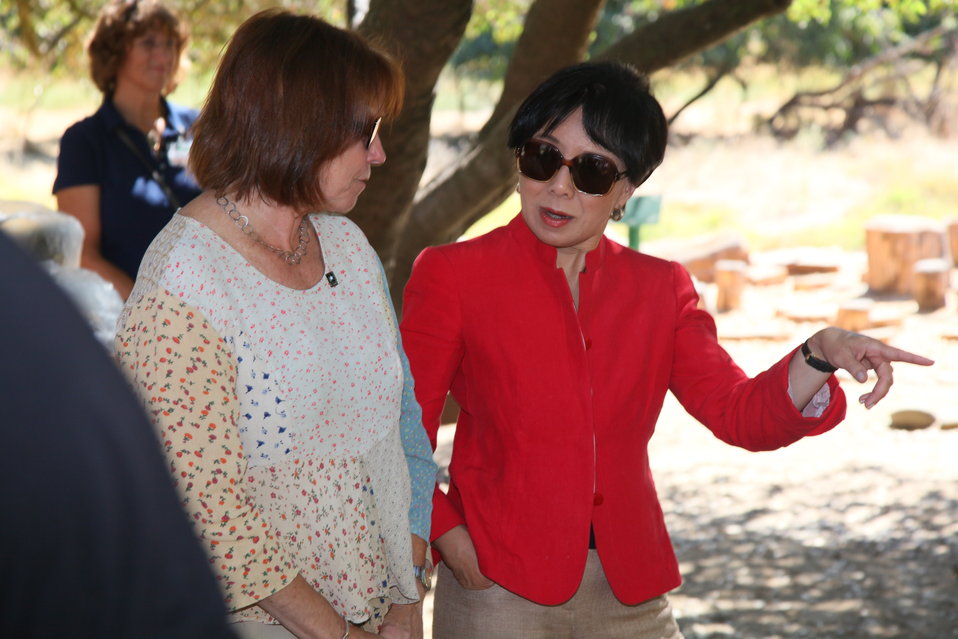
America’s Great Outdoors event at the Effie Yeaw Nature Center

Jo-Ellen Darcy, Assistant Secretary of the Army for Civil Works (left), and U.S. Rep. Doris Matsui joined park rangers and leaders from the U.S. Army Corps of Engineers for an America’s Great Outdoors event at the Effie Yeaw Nature Center in Carmichael, Calif., Sept. 27, 2011. The two joined students from Maple Elementary School nature walks and outdoor education activities to help them connect with the outdoors.